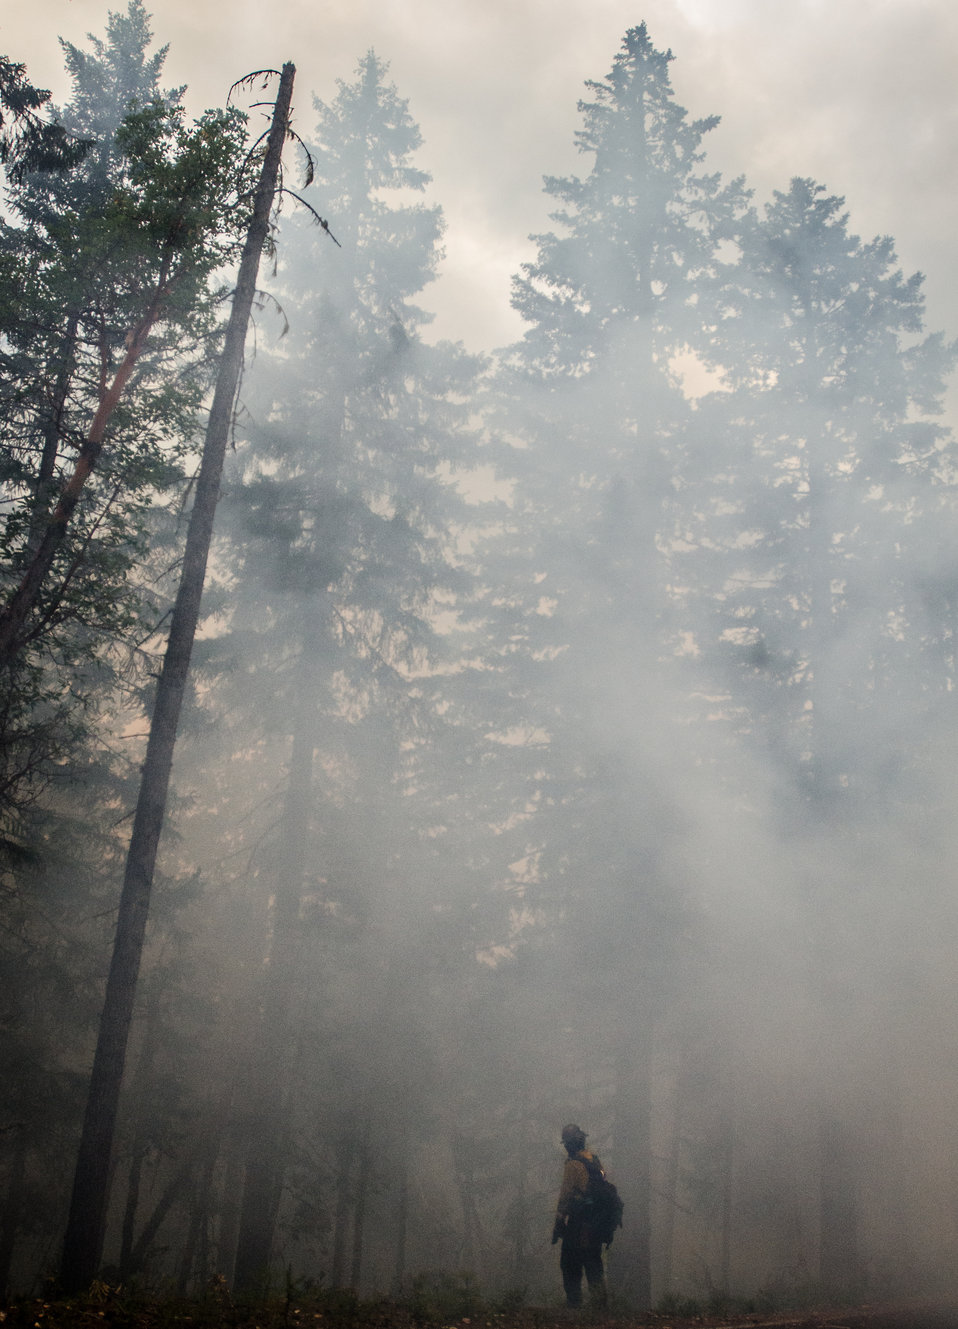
Geronimo Interagency Hotshot Crew, Department of the Interior (DOI) Indian Affairs (IA) Bureau of Indian Affairs (BIA) San Carlos Agency in Arizona; on assignment at the Big Windy Complex Wildlands Fire, approximately 15 miles west of Interstate-5 and East Northeast of Galice, Oregon, conducts a prescribed burn 'burnout' operation to help stop the main fire that may head toward this roadway, on Friday, Aug 9, 2013. The primary mission of the Interagency Hotshot Crews (IHC) is to provide a safe, organized, mobile and highly skilled hand crew for all phases of wildland fire suppression. The arduous duties and specialized assignments required of IHC personnel require uniform staffing, certification, training, equipment, communications, transportation, organization, and qualifications that adhere to interagency standards and guidelines.